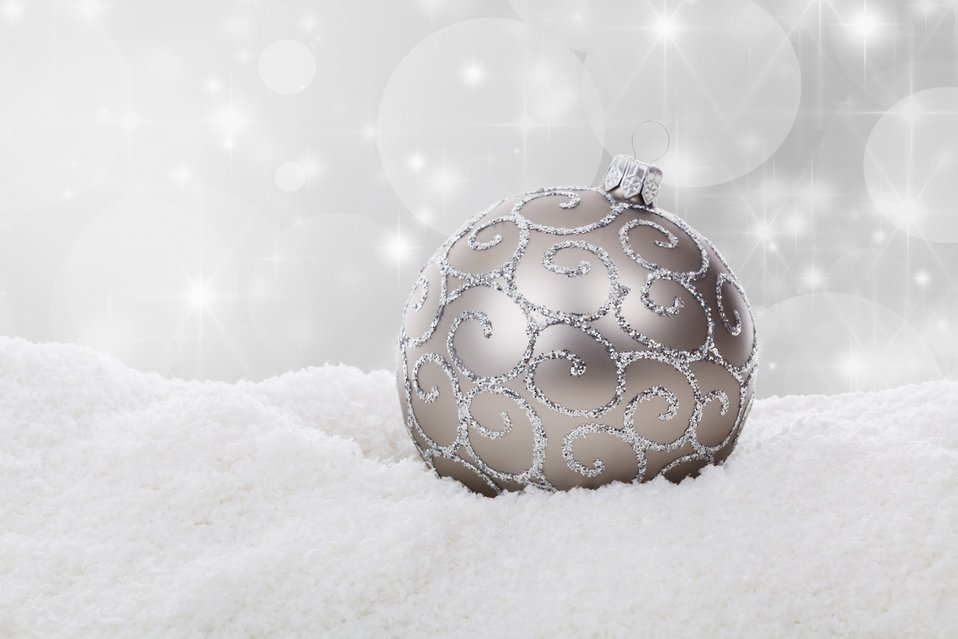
Silver christmas ball in snow on silver background.